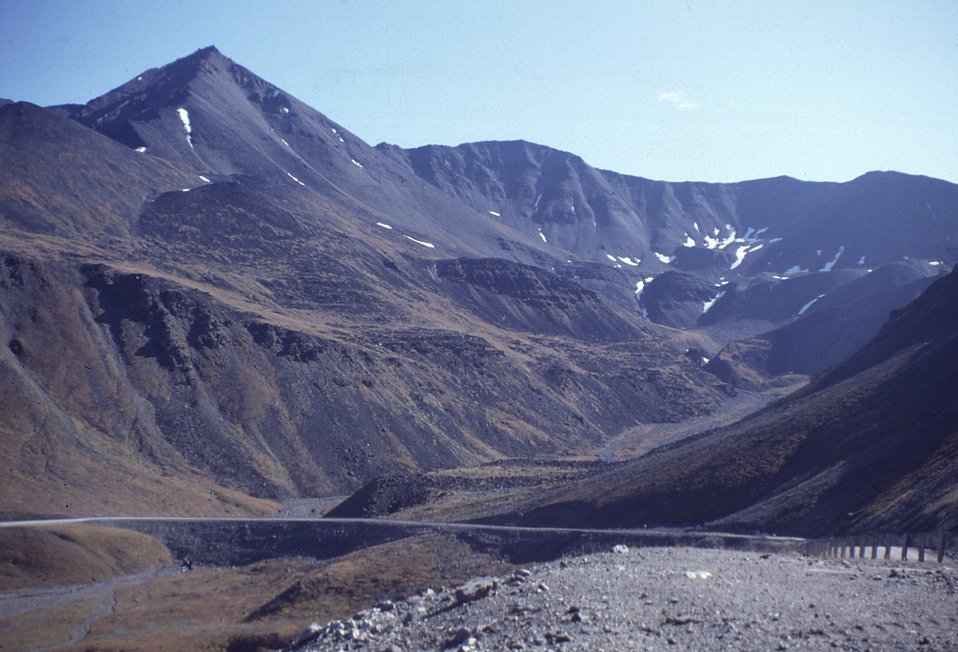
Atigun Pass, Dalton Highway